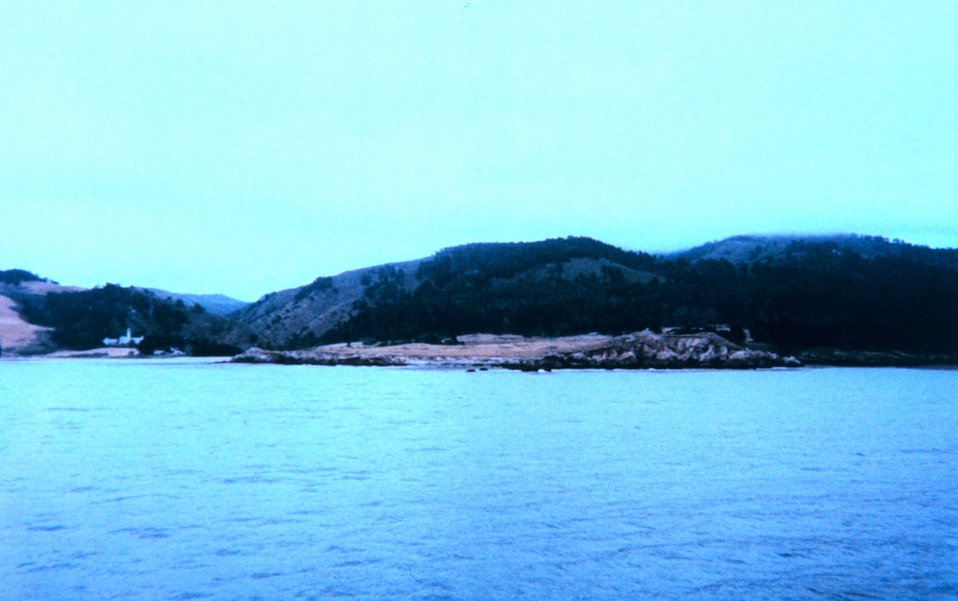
Carmel Valley and Carmelite monastery as seen from Carmel Bay. Portion of composite image of Point Lobos.